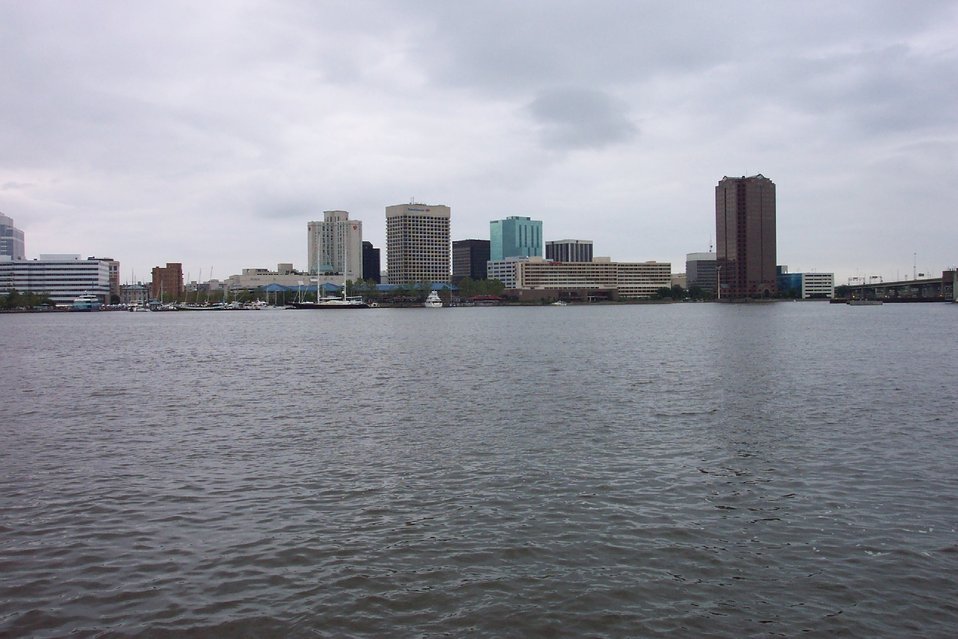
Norfolk skyline as seen from Portsmouth.